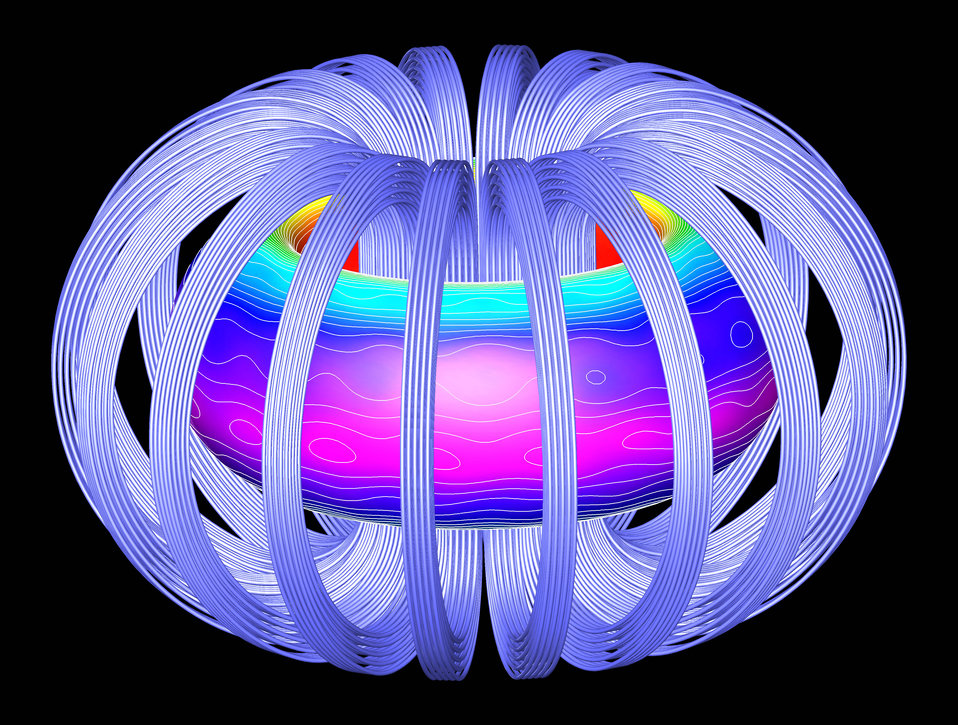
SHOWN IS THE ITER PLASMA SURFACE AND TOROIDAL MAGNETIC FIELD COILS; COLOR CONTOURS INDICATE LOCAL MAGNETIC STRENGTH AT OAK RIDGE NATIONAL LABORATORY.

The way structure of the contour lines is caused by deviations from axisymmetry due to thefinite number of toroidal field coils and the presence of ferrite materials in three blanket modules, which are located on one side of the tours. Data for this plot by ORNL's VMEC 3D equilibrium code using profiles for an ITER Scenario 4 Plasma.